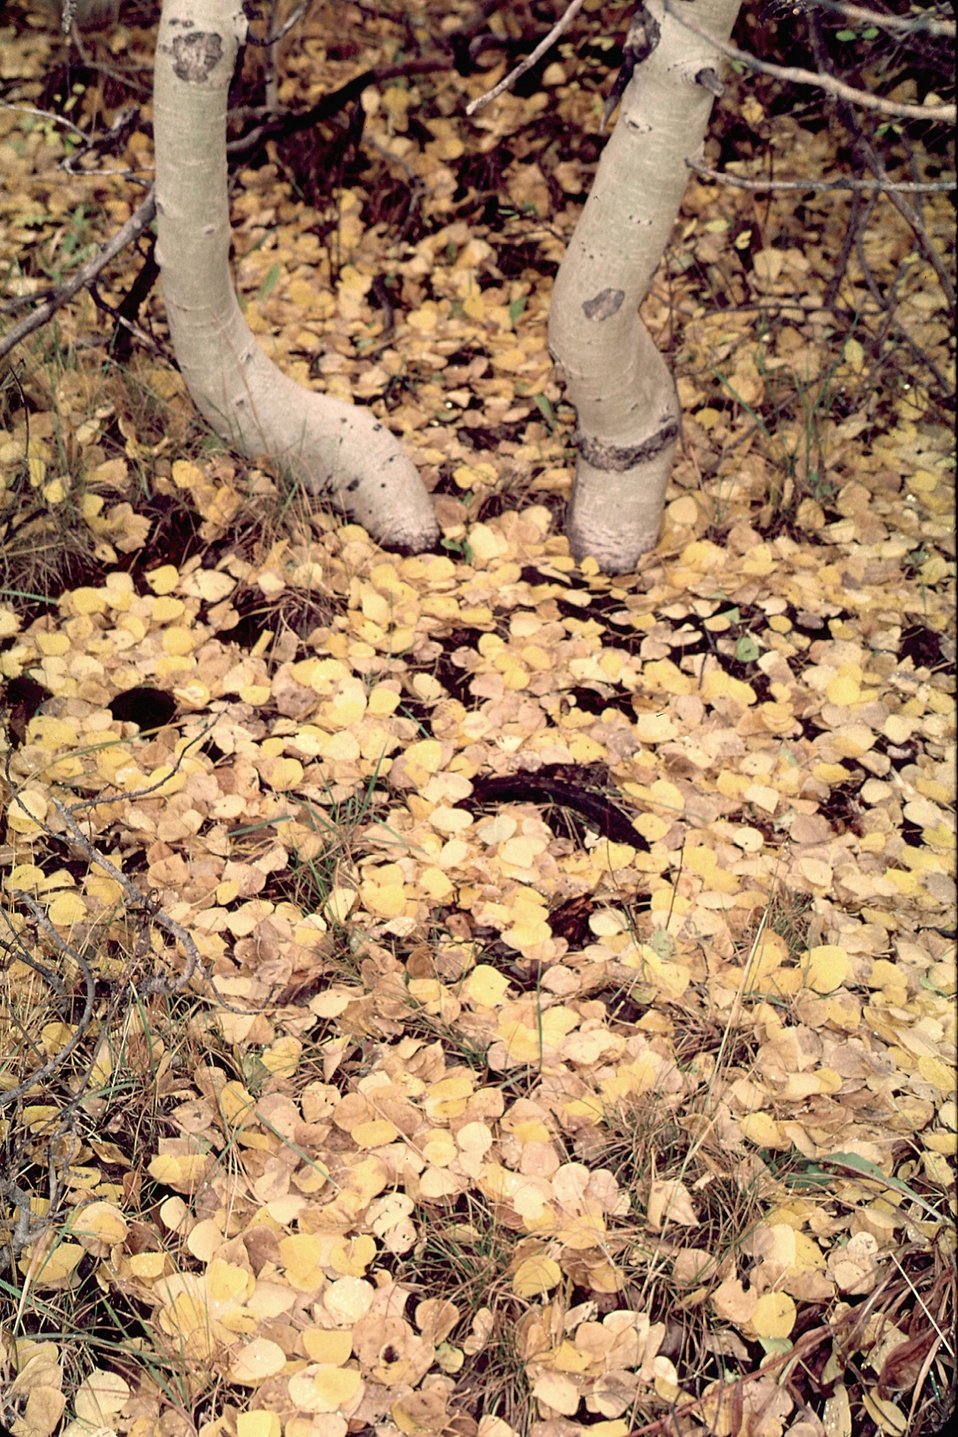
Aspen leaves at Fish Lake, Steen's Mountain.